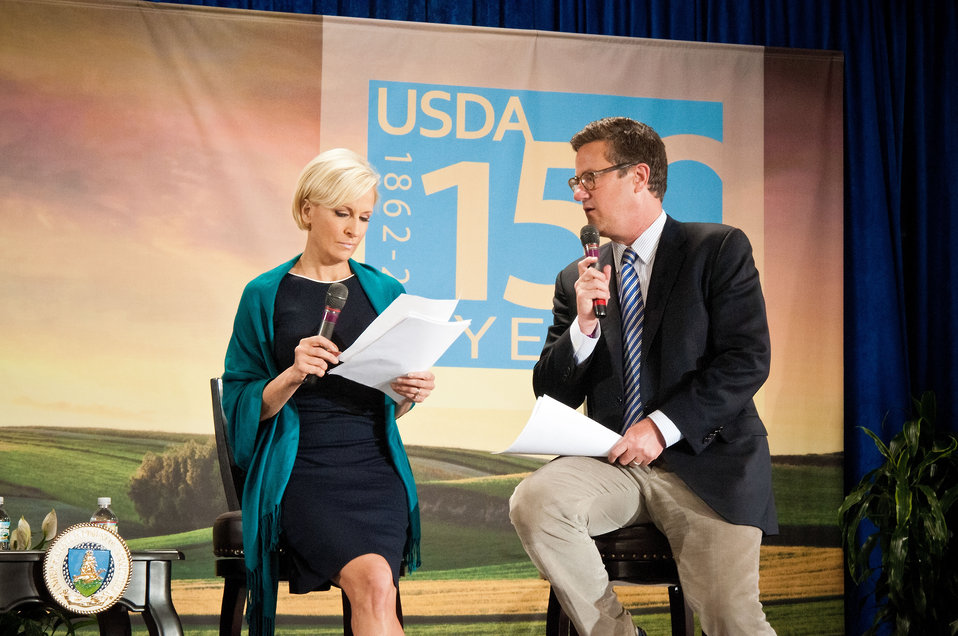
Mika Brzezinski and Former Congressman Joe Scarborough (R-Fla.) hosts of MSNBC’s “Morning Joe.”MSNBC were the Masters of Ceremony for the United States Department of Agriculture 150th Anniversary's celebration in Washington, D.C., on Tuesday, May 15, 2012. May 15, 1862 President Abraham Lincoln signed into law on Saint Isador’s Day, The Patron saint of Farmers, an act of Congress establishing the U.S. Department of Agriculture. President Abraham Lincoln referred to the Agriculture Department as the “People’s Department”. He knew the importance of agriculture to our prosperity – particularly at a time when about half of all Americans lived on the farm.